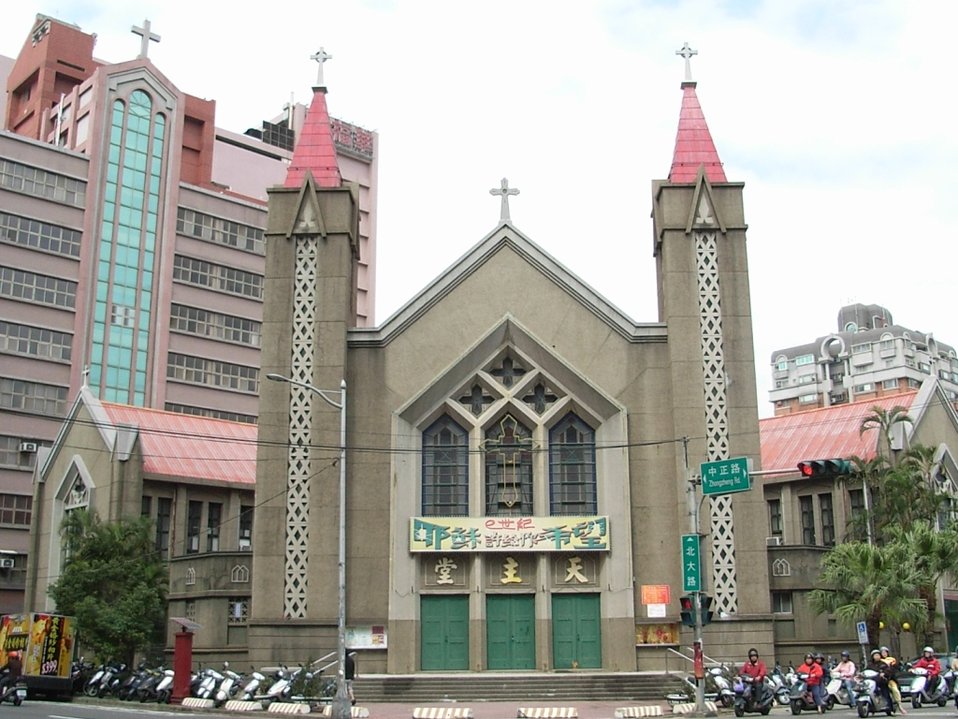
Taiwan Hsinchu City Catholic Church 日本語: 台湾新竹カトリック教会 中文（繁體）: 臺灣新竹北大教堂（天主教）